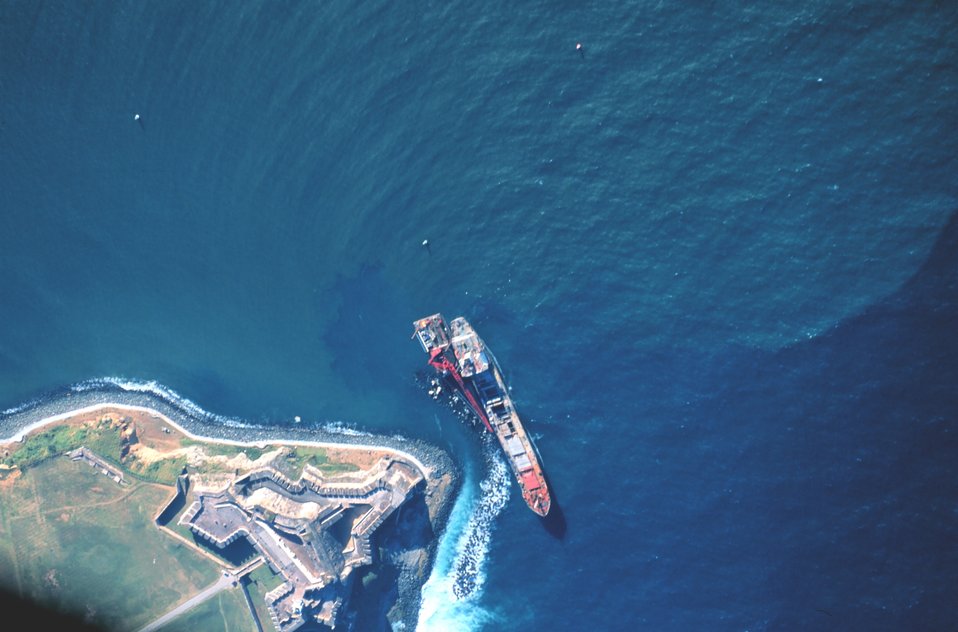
A grounded Russian merchant vessel off the El Morro at the entrance to San Juan Harbor.